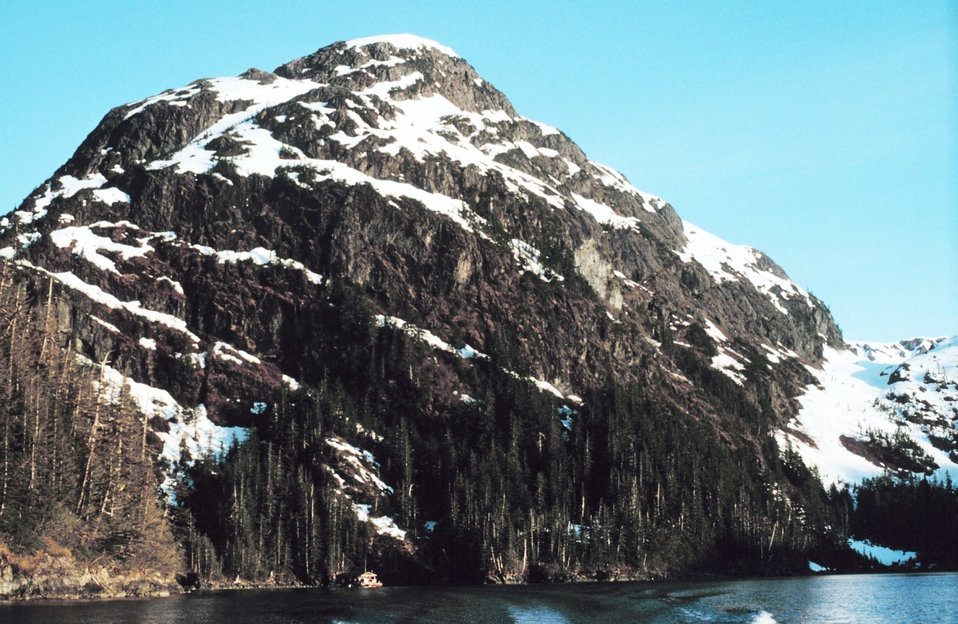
Barge at bottom of photo summer home to scientists studying effects of EXXON VALDEZ oil spill.